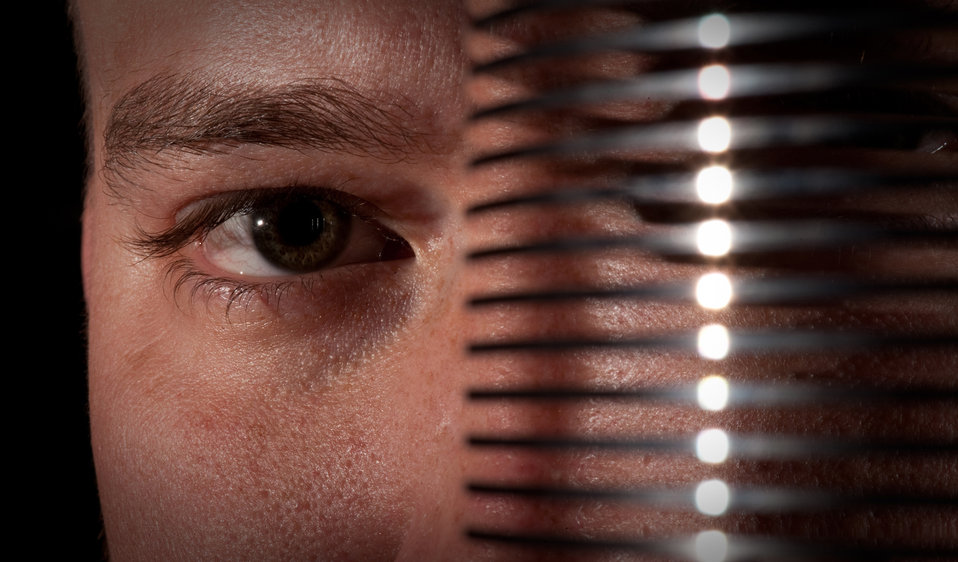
Here's looking at you

Jon Beasley peers through a disk platter stack Sept. 9, 2010, at the Defense Computer Forensic Laboratory in Linthicum, Md. Mr. Beasley is an image and extraction technician who makes disk images of computer memory storage devices.